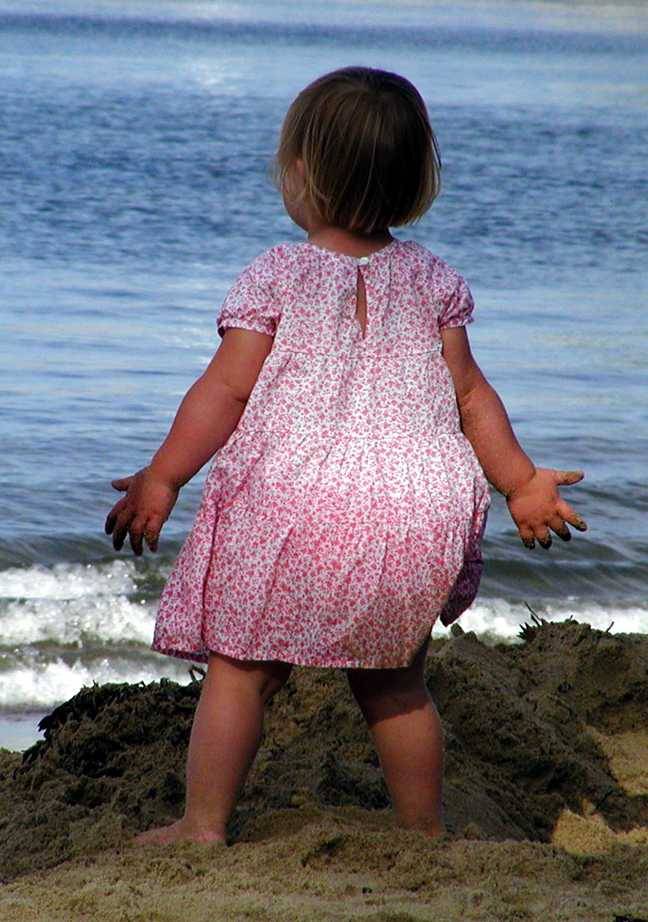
Uploaded by request of Michelle Roberts.

The photo was taken in Rockport, MA of her daughter Caroline, age 2. This picture inspired Michelle to start her own company focusing on sustainable home building.